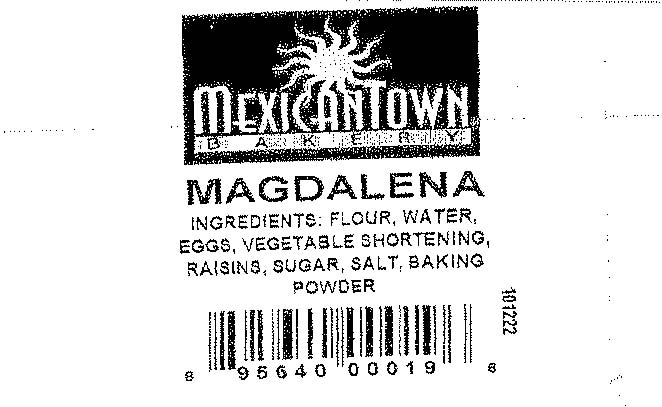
RECALLED - Mexicantown Magdalena

April 7, 2011 - Product Recall - Mexicantown Whole Issues Allergy Alert On Undeclared Pecans In Pan Nuez And Undeclared Milk In Magdalena, Pan De Maiz, YoyoPan Nuez, And Tacos De Pan Danes.